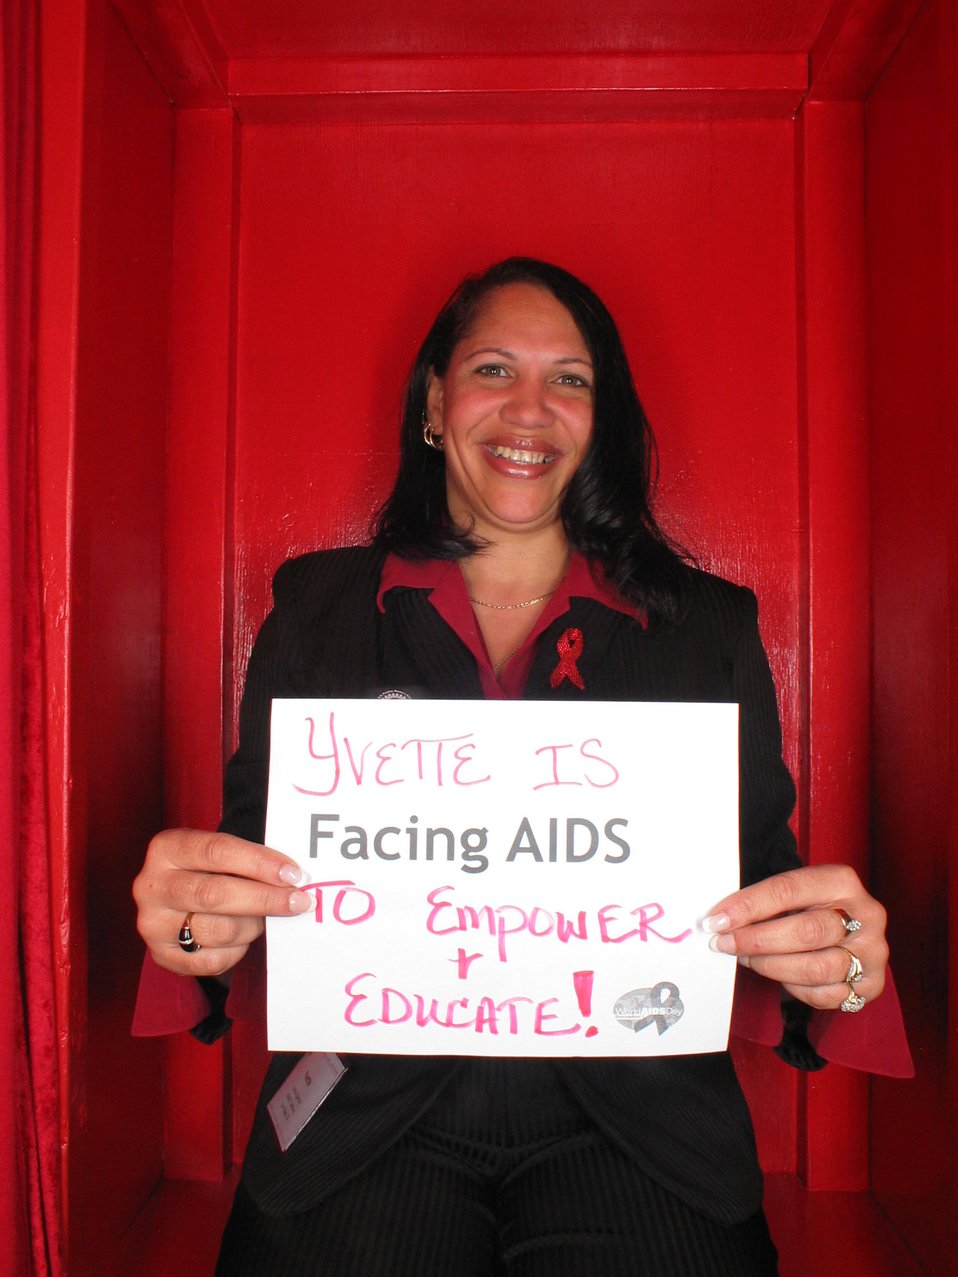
Facing AIDS to empower and educate!